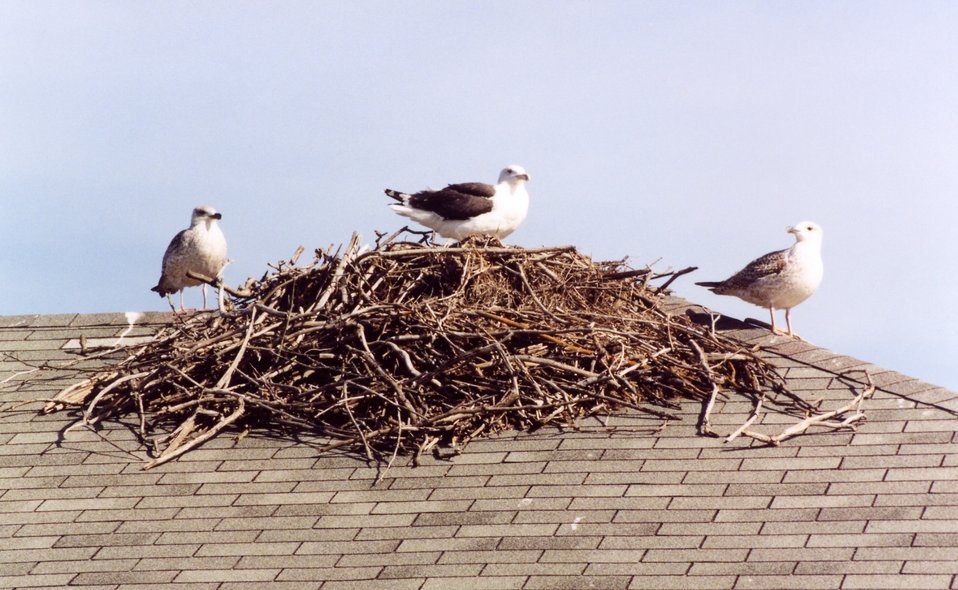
Gulls on osprey nest atop a boat house.